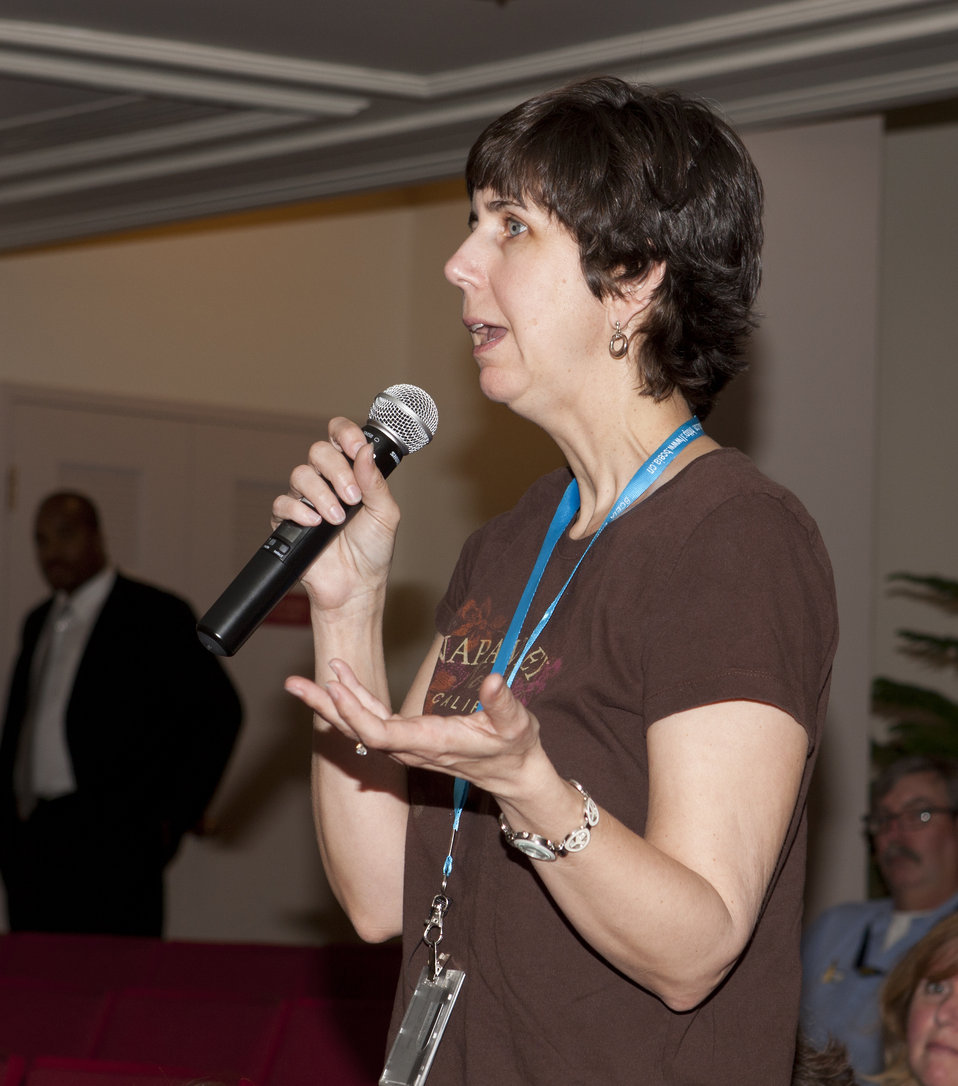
An employee at the U.S. Department of Agriculture (USDA) Carver Center in Beltsville, MD asks Agriculture Secretary Tom Vilsack a question at the USDA Employees Ask the Secretary Session on Wednesday, March 21, 2012.